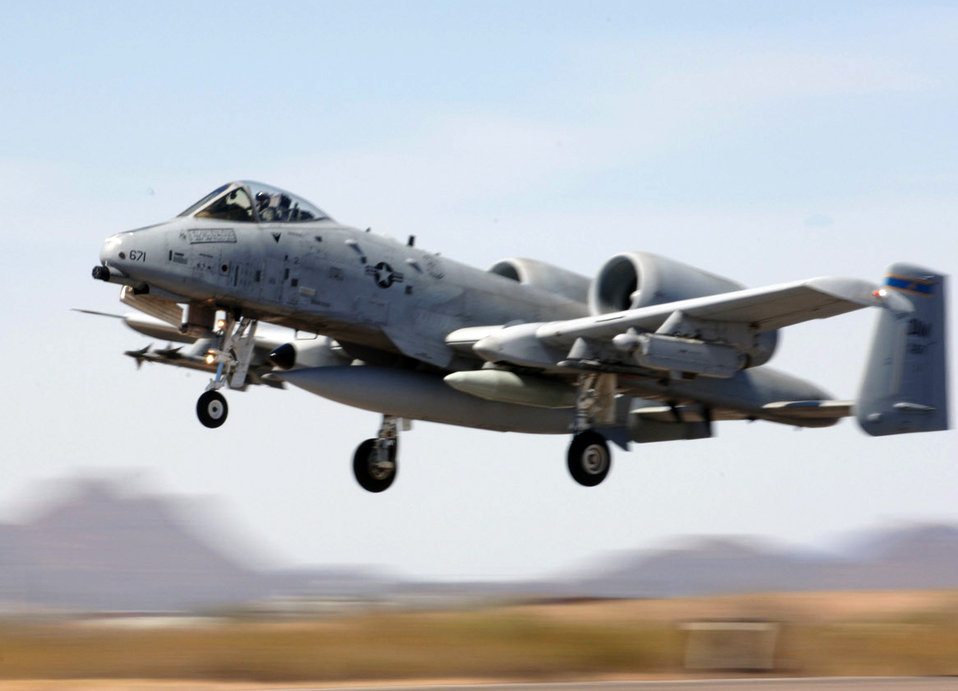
Exercise Bushwacker 06-02

An A-10 Thunderbolt II takes flight as part of a simulated deployment on Saturday, April 1, 2006, at Davis-Monthan Air Force Base, Ariz.